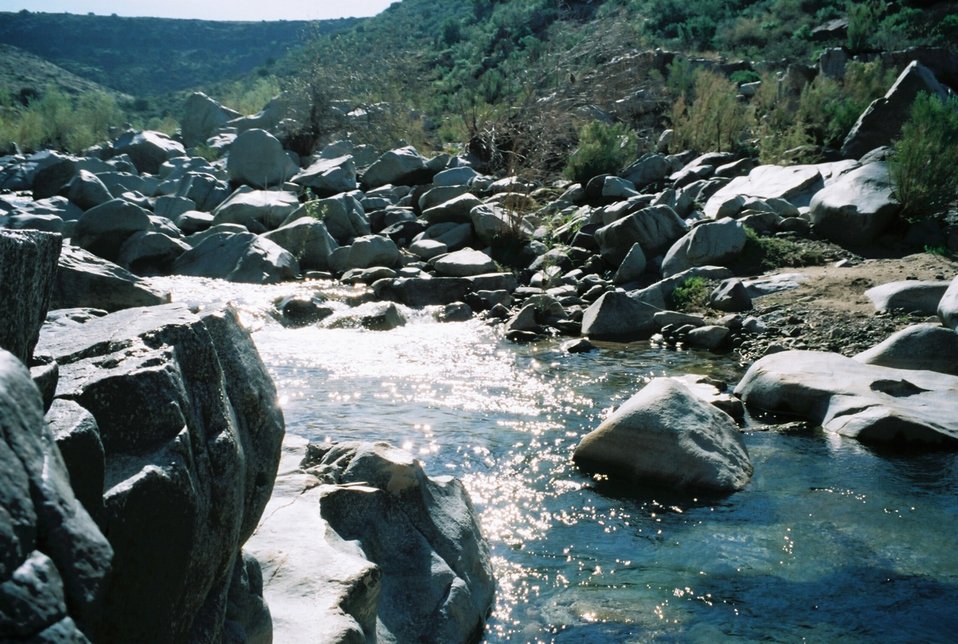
The Agua Fria River runs through the canyon that shares its name.